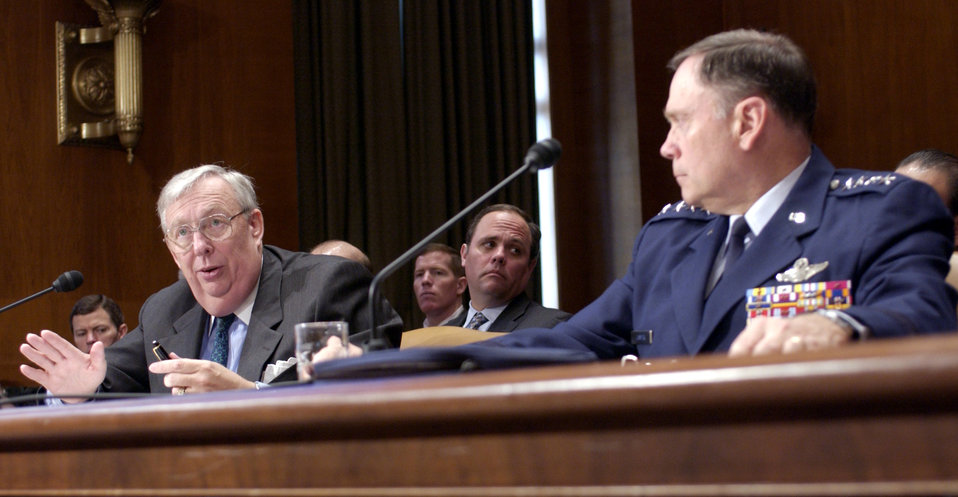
Roche and Jumper

WASHINGTON -- Secretary of the Air Force Dr. James G. Roche and Air Force Chief of Staff Gen. John P. Jumper told members of the Senate Appropriations Committee subcommittee on defense March 26 that the U.S.-led coalition has achieved total air dominance in the skies over Iraq.